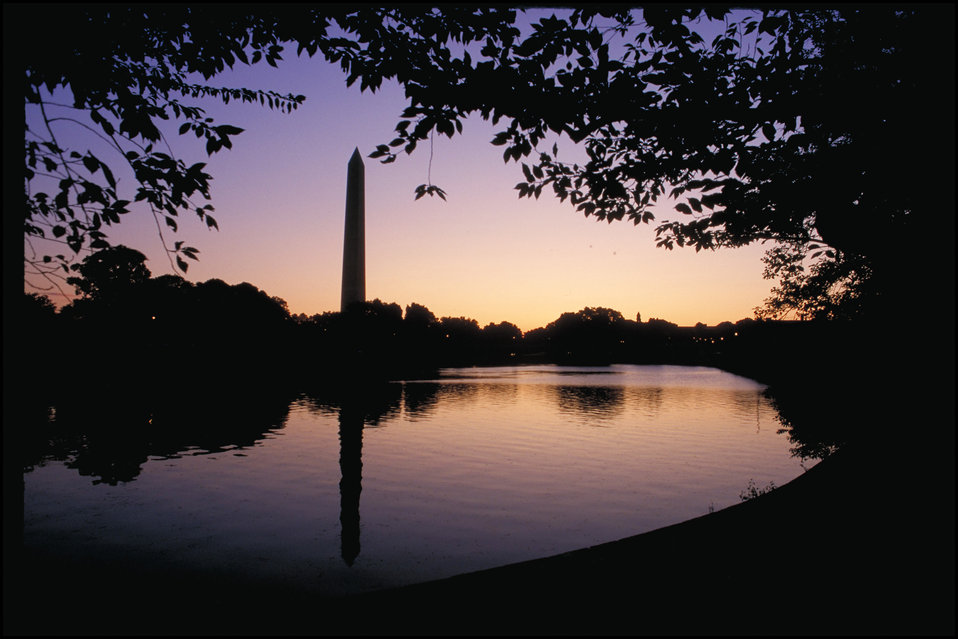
Washington Monument in Washington, DC.